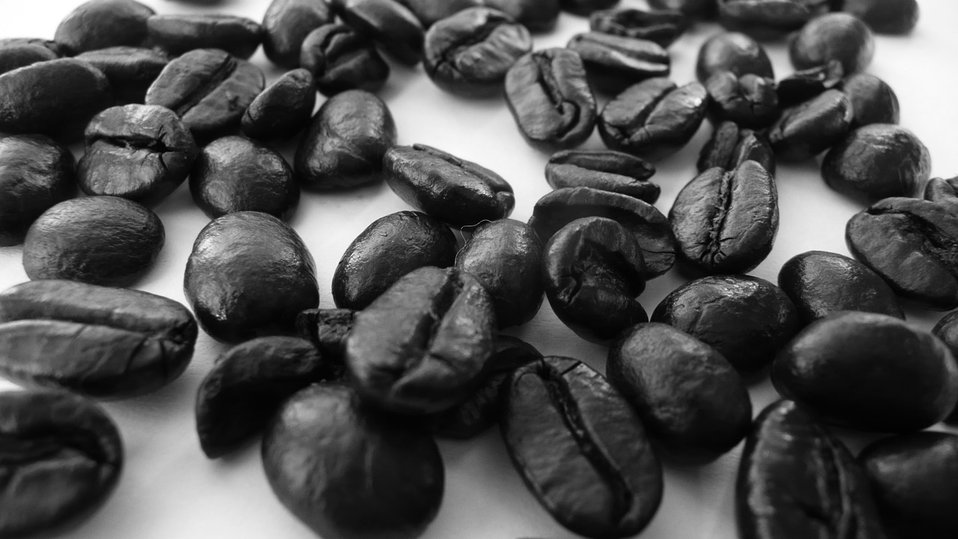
Coffee beans.